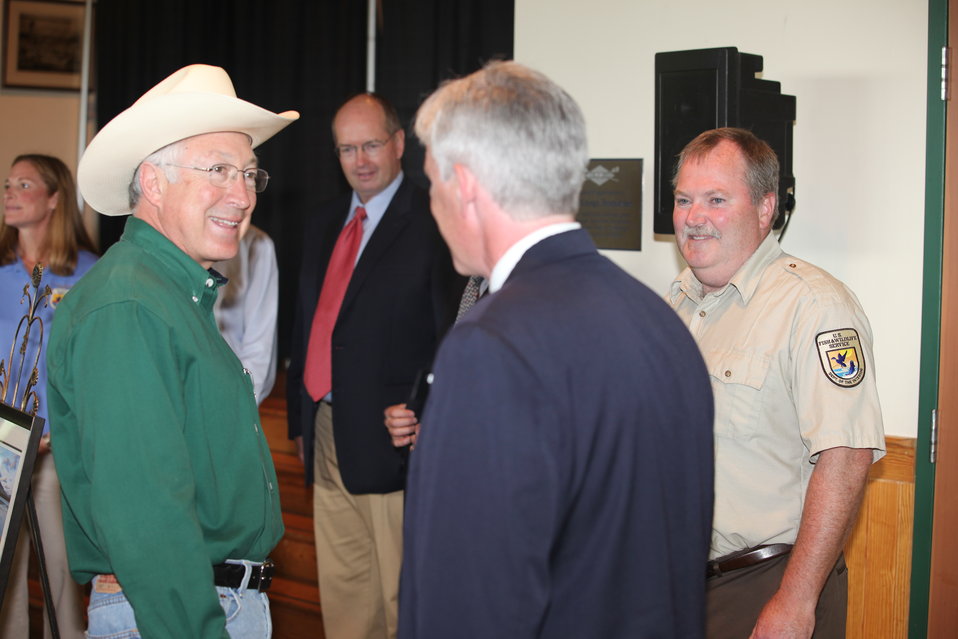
Ken Salazar & Andy French

Secretary Ken Salazar and Silvio O. Conte National Fish & Wildlife Refuge Manager Andy French.